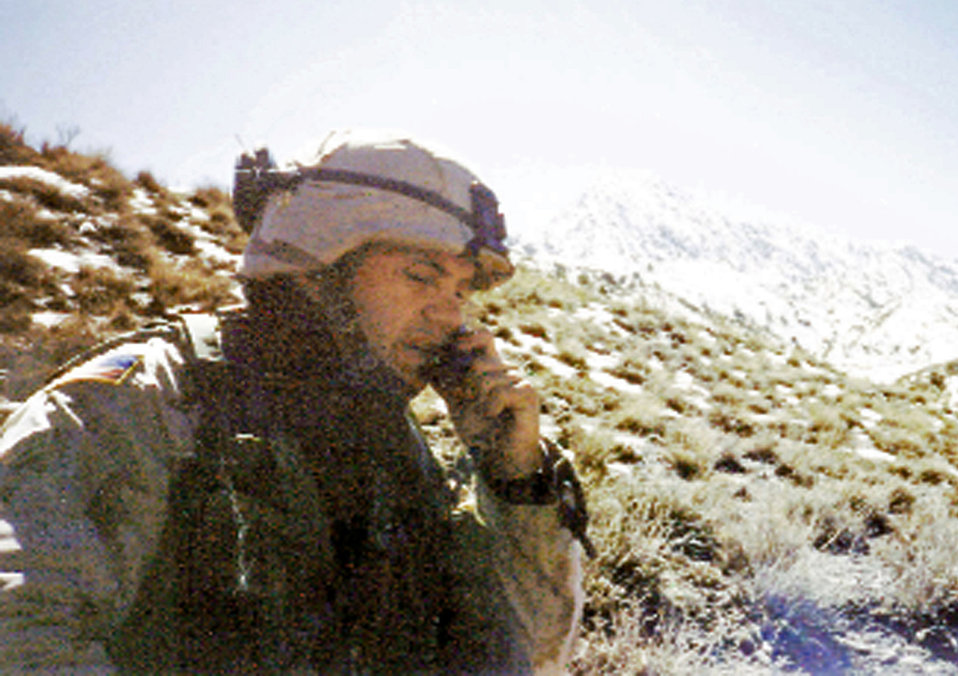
Heroism earns Airman presitgious award

In this photo taken under extreme conditions in Afghanistan, Tech. Sgt. Stephen Achey talks to military officials while assigned to Bagram Air Base in 2002. Sergeant Achey was awarded the Silver Star for his actions in Afghanistan and received the Keeper of the Flame Award from the chairman of the Joint Chiefs of Staff Sept. 20 for his efforts in fighting the war on terrorism.